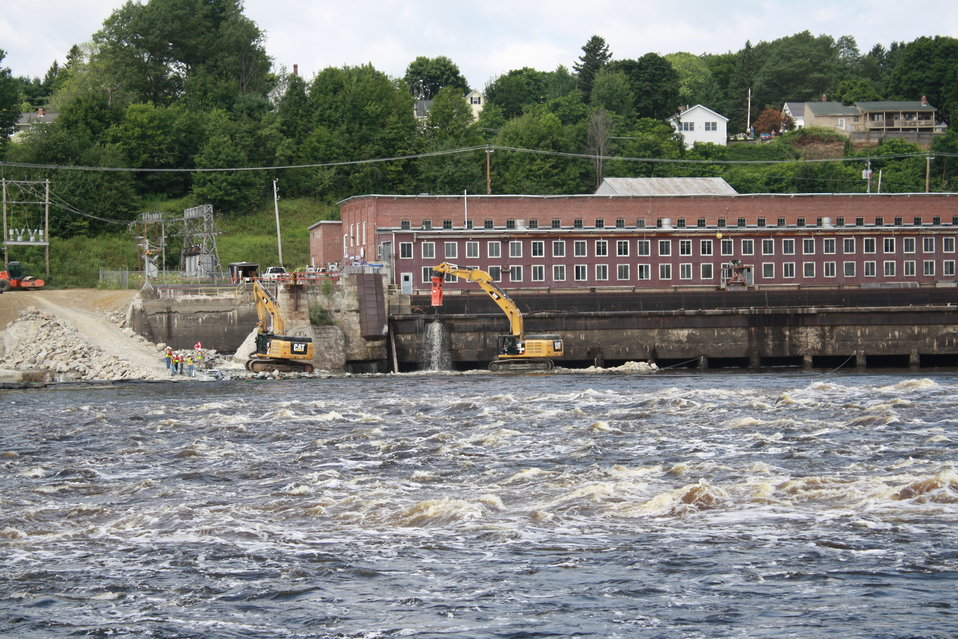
Veazie Dam Removal

The dam is breached!